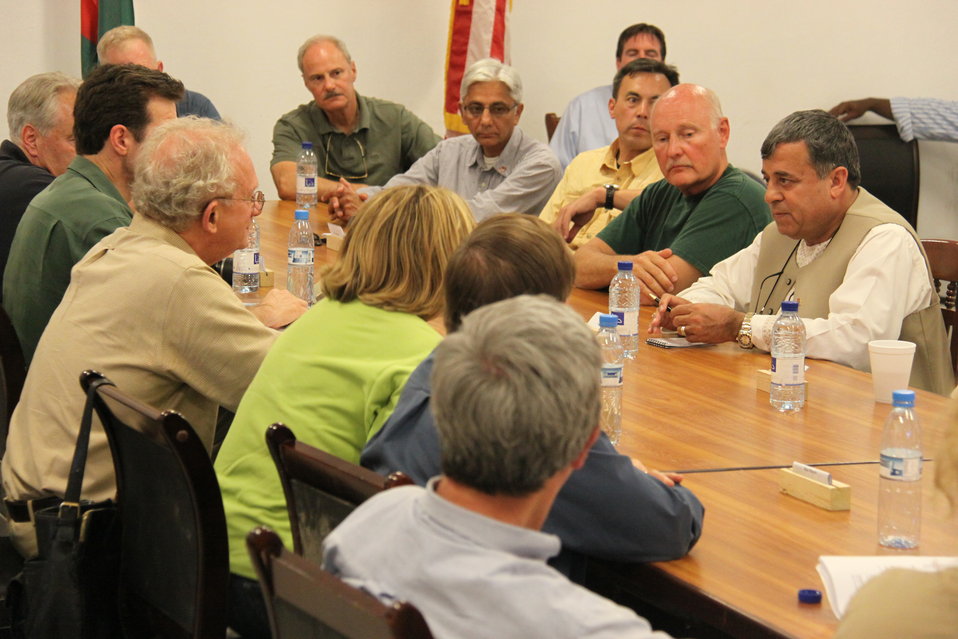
Meeting with Local Leaders in Kandahar